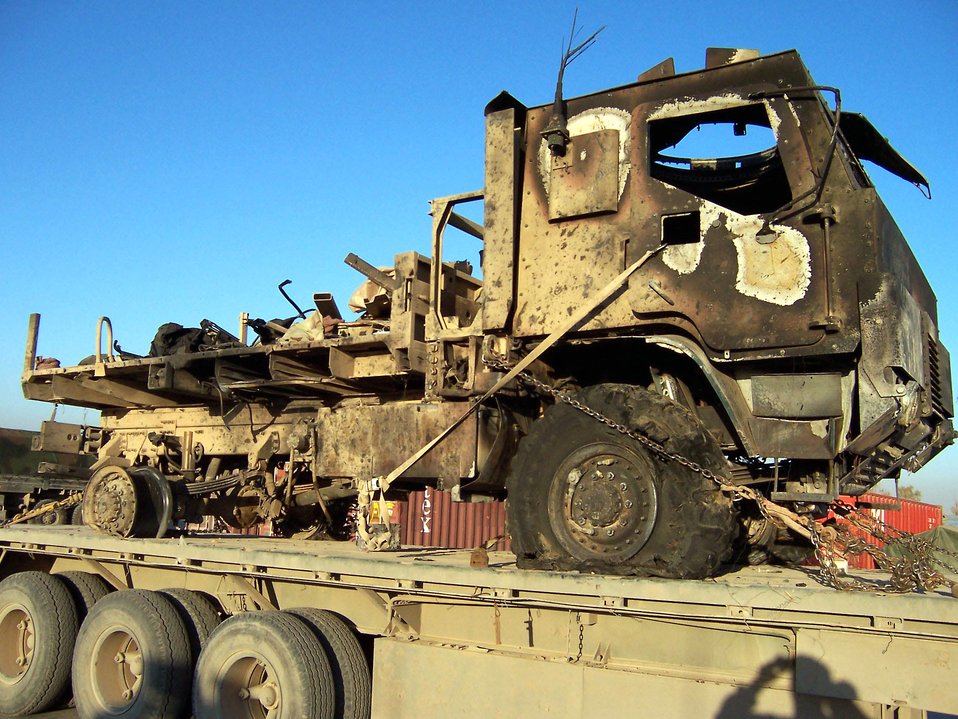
Story of Survival

NORTHERN IRAQ -- A suicide bomber struck this truck on Nov. 30, 2004 killing seven and injuring 20 more. Miraculously, the three Airmen inside the vehicle emerged with only minor injuries.